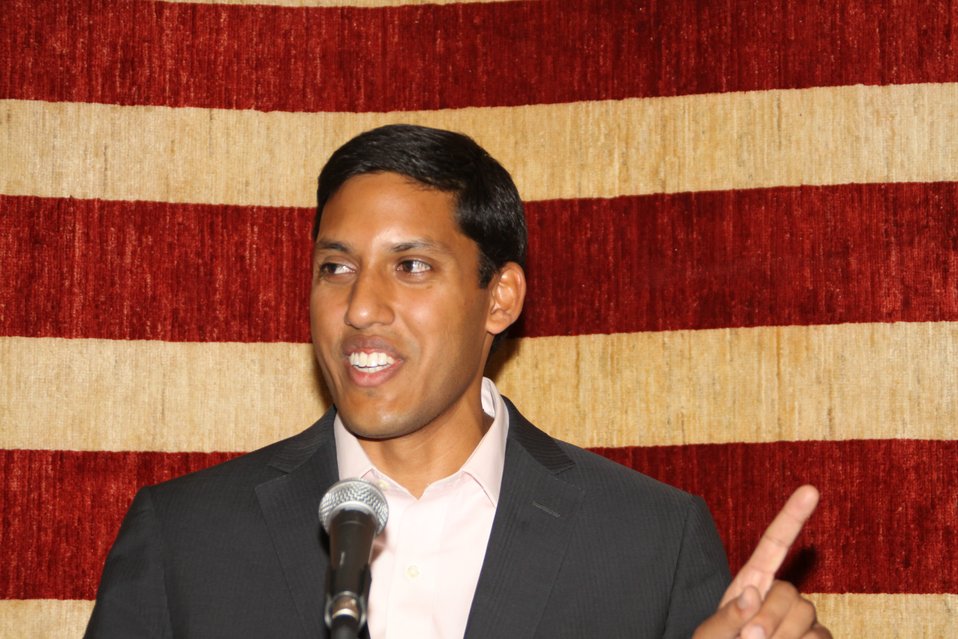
US Embassy Town Hall July 21, 2010